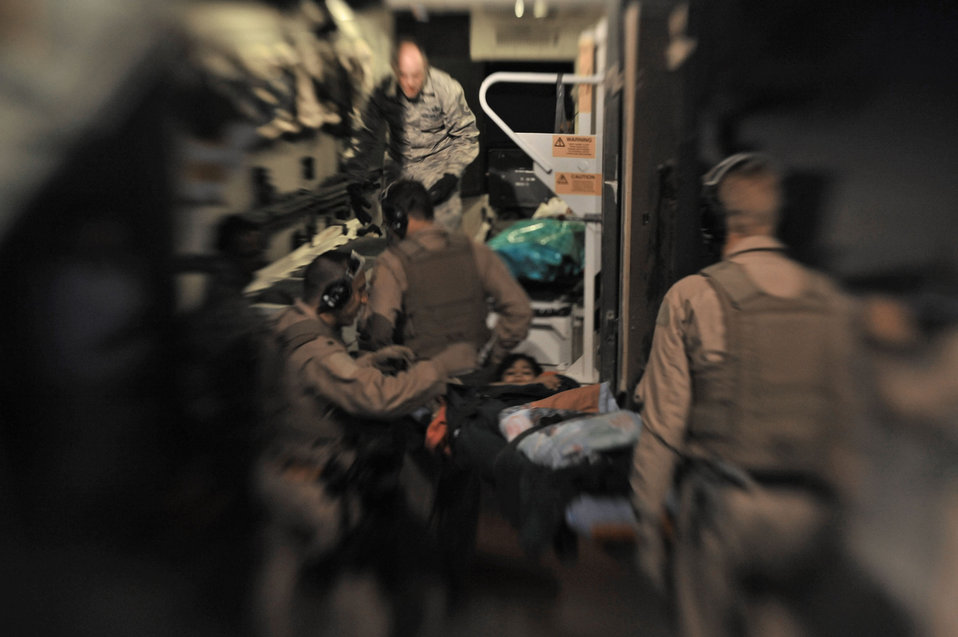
Kandahar Airmen fly missions of mercy

Airmen transport an Afghan patient to a higher level of care at Camp Bastion Oct. 6, 2009. The U.S. Air Force provides care to patients from the U.S., coalition partners and locals on a daily basis. These Airmen are assigned to the 451st Aeromedical Squadron at Kandahar Airfield, Afghanistan.